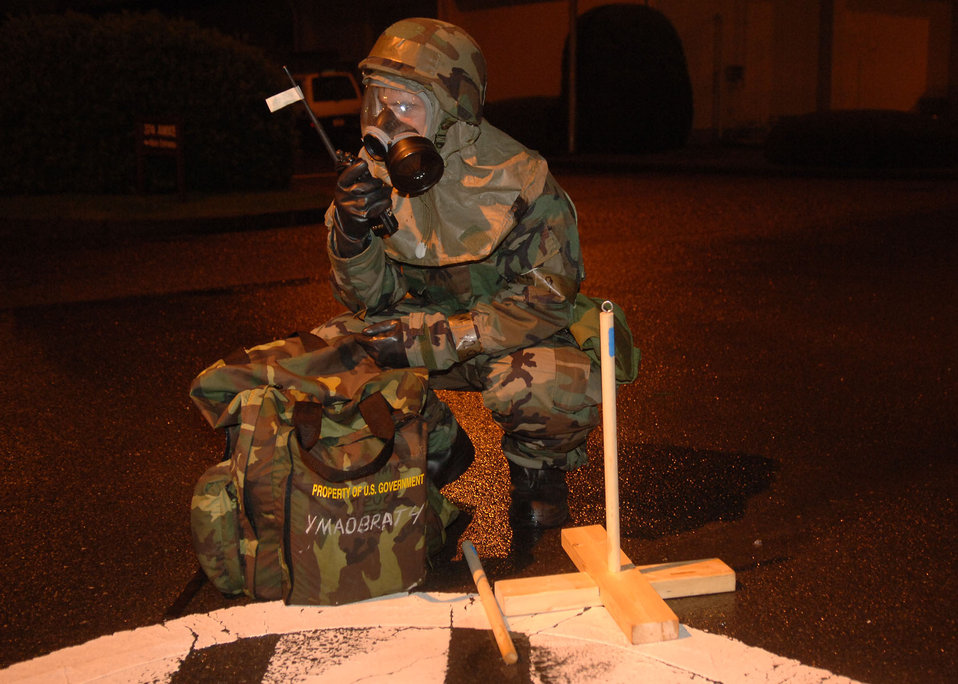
Practicing to stay safe

Airman 1st Class Thomas Underwood contacts his unit control center after discovering contamination while on a post-attack sweep during an exercise at Yokota Air Base, Japan. The 374th Air Wing was conducting the exercise to test Airmen's responses to chemical or biological hazards. Airman Underwood is with the 36th Airlift Squadron